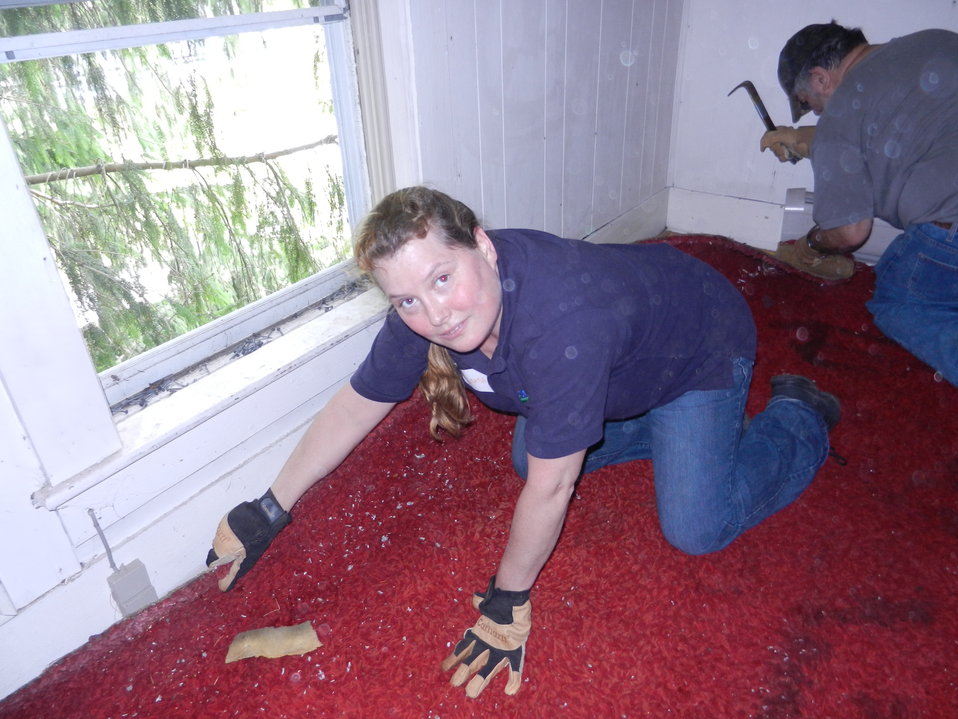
35

U.S. Department of Agriculture (USDA) Rural Development (RD) Rural Housing Specialist Susan Poland and USDA RD Vermont Area Director Michael Bard remove carpet on the third floor of Mountainside House Teen Center in Ludlow, VT on June 8, 2012 as part of June Homeownership Month activities. The Center was severely damaged by floodwaters when tropical storm Irene tore into Vermont. USDA RD Vermont employees along with dozens of other volunteers worked with shovels, rakes and a lot of muscle and heart to reclaim the flower garden, lawn and yard. The volunteers pulled up carpet, painted, and repaired a bathroom floor.